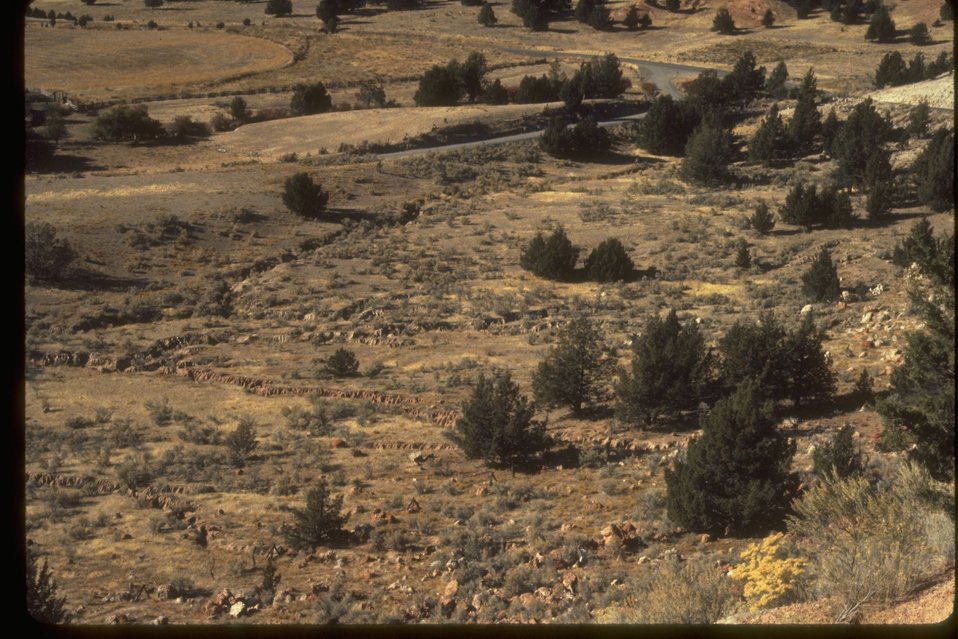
Eroded valley bottom at Cottonwood Creek Monument.